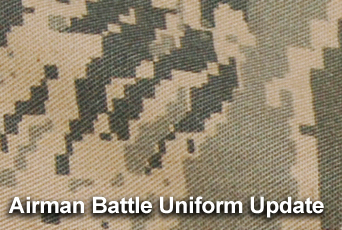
Air Force official discusses uniform updates

The new Airman Battle Uniform, designed to eventually replace both the Battle Dress and Desert Combat Uniforms, is currently in full production. The new service coat, referred to as the